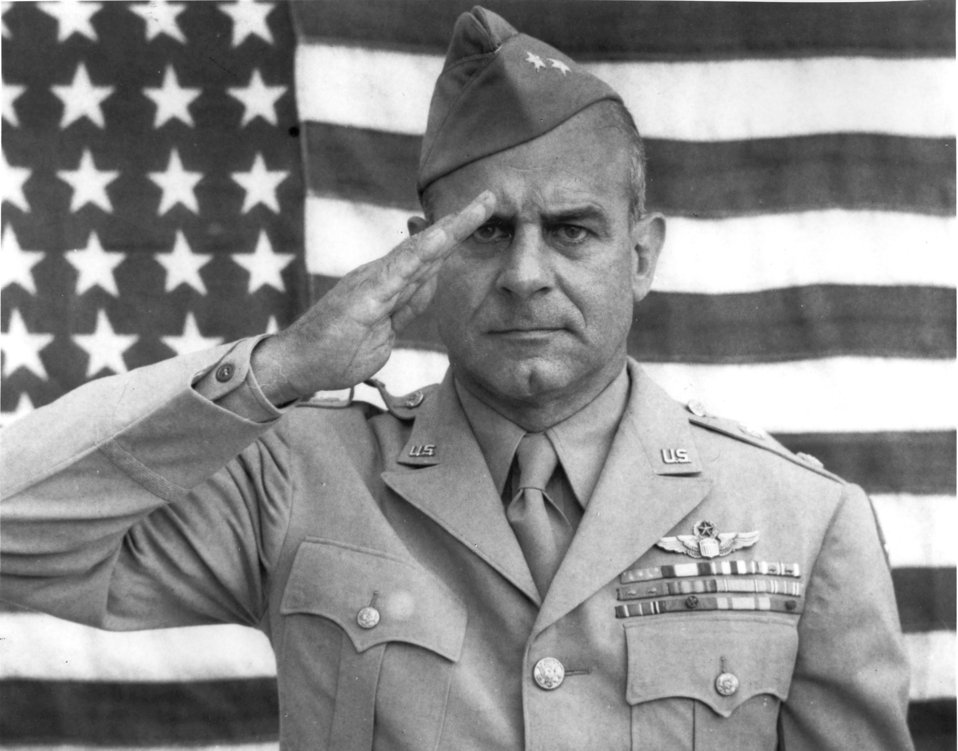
Maj. Gen. James H. Doolittle .